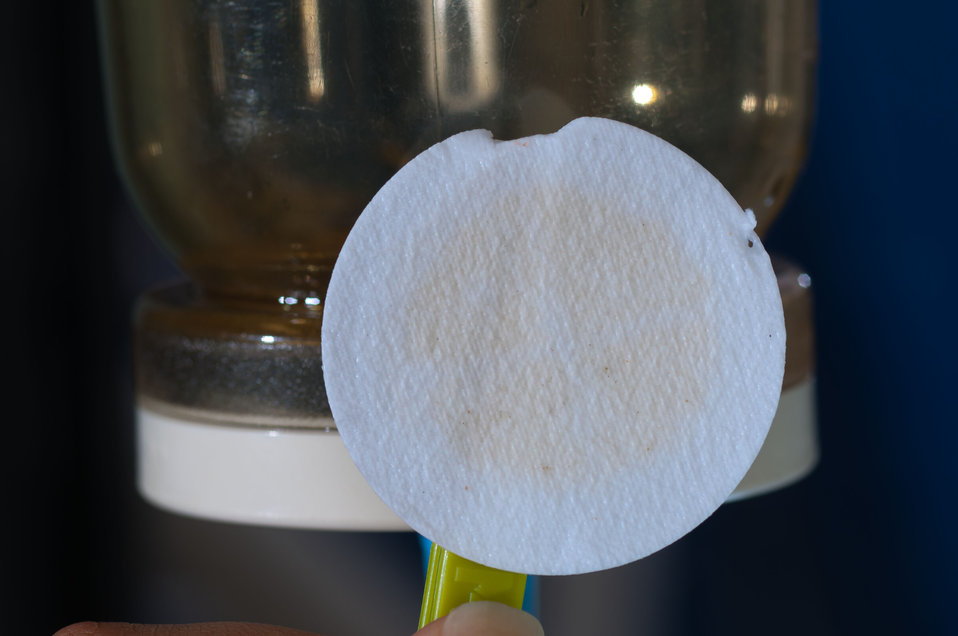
August 6, 2011 Chlorophyll filtered from our water samples

Chlorophyll count is one indicator of water quality we're looking for in each water sample from the bottom, middle and surface depths. We're also sampling for total phosphorus and total nitrogen.

All three indicators will tell us more about the quality of the water and the amount of nutrients that could be coming from rivers and runoff on land.